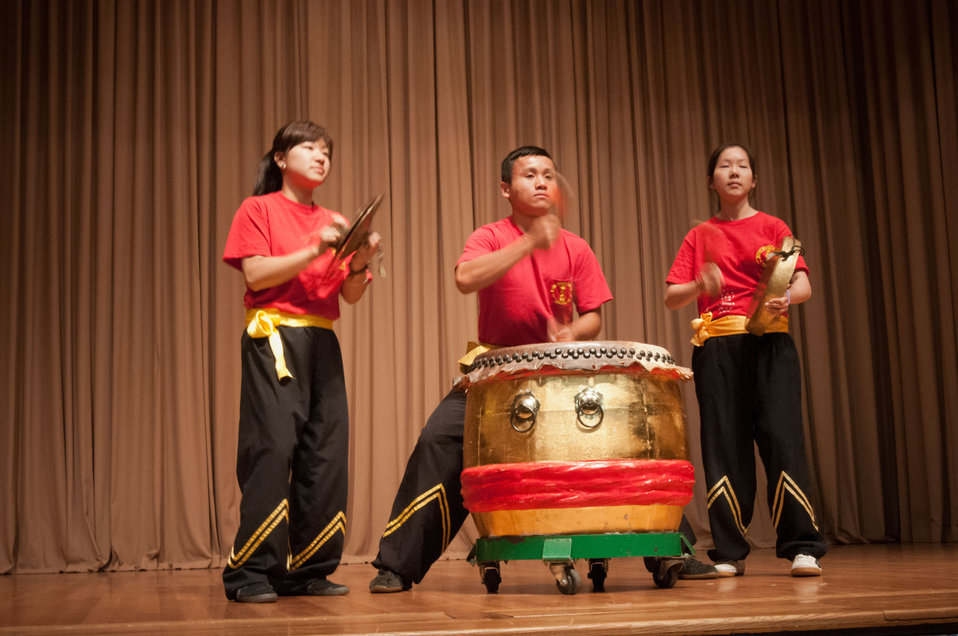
The Wong People Studio, The Ancient Chinese Dragon Dance Group performed the Dragon dance at the 2012 Asian Pacific American Heritage Observance “Striving for Excellence in Leadership, Diversity and Inclusion” at the U.S. Department of Agriculture in Washington, D.C. on Thursday, May 24, 2012. The Dragon dance is an ancient ritual based on Taoist Principles used to drive away evil spirits or bad energy (chi). The costume worn while performing this ritual is specifically designed for the purpose of driving away evil. The music for the Dragon Ritual is also an integral element of this energy directing ritual. A Dragon Ritual is successful when the Dragon, musicians and spectators synchronize their flow of internal energy (chi) to drive away the bad energy.